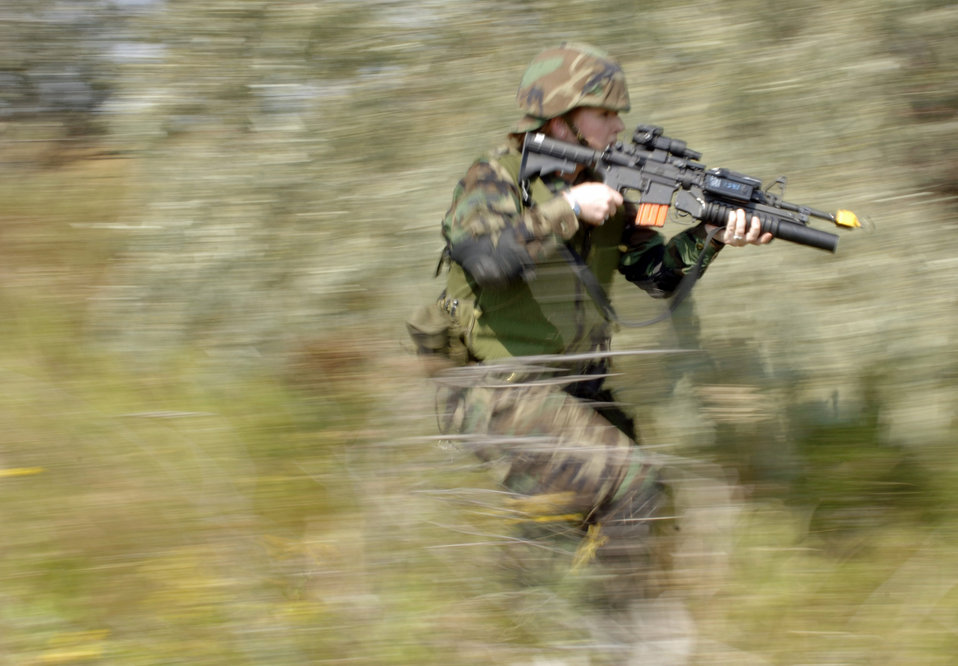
Unique mission: Guarding 91st Space Wing missile complex

Senior Airman Melissa Philhower made a tactical move during a coordinated security training exercise Aug. 22. The Airman from Orlando, Fla., is with the 91st Missile Security Squadron, Minot Air Force Base, N.D.